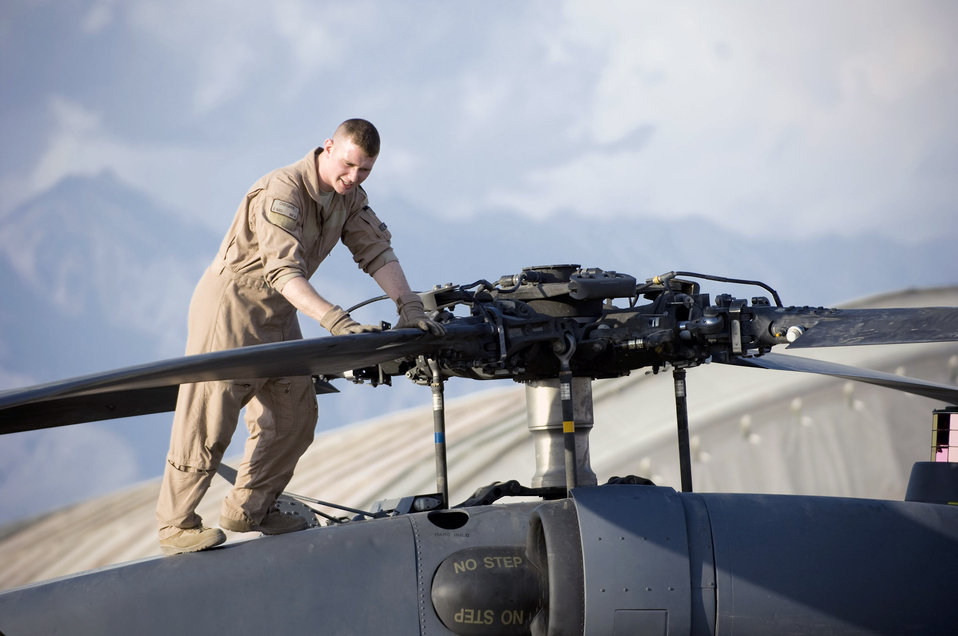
Flying with the Pave Hawks

Airman 1st Class Devin Chesbro, a 33rd Expeditionary Rescue Squadron flight engineer, checks the main rotor on an HH-60G Pave Hawk Aug. 2 at Bagram Air Base, Afghanistan. Preflight checks such as these help to minimize the occurrences of in-flight emergencies. Airman Chesbro is deployed from the 33rd Rescue Squadron at Kadena AB, Japan.